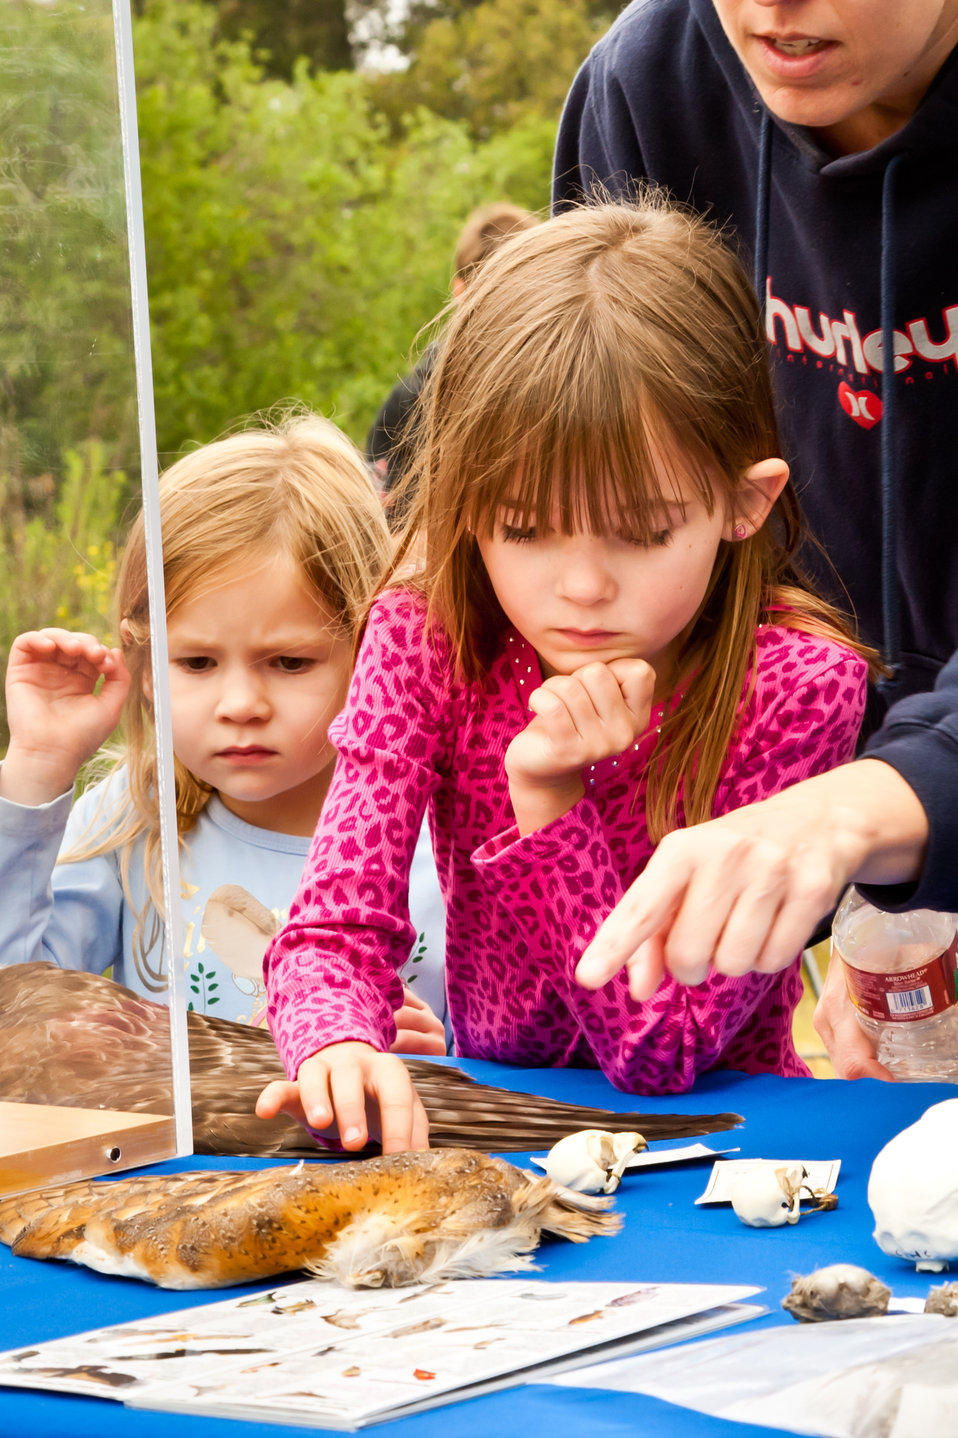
Real feathers to touch!

Visitors to the San Diego NWR on Earth Day 2012 got to touch and feel real feather specimens from birds such as Red tail hawks, barn owls, and more!